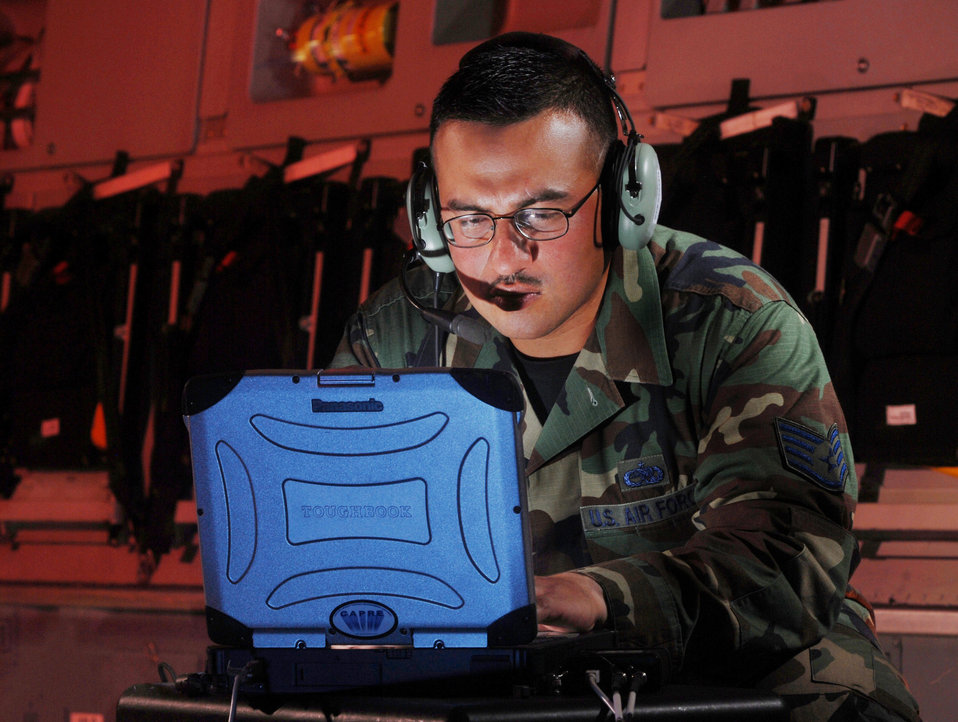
One more click and it's done ...

Staff Sgt. Carlos A. Rocha updates software for the missile warning system onboard a C-17 Globemaster III at March Air Reserve Base, Calif. He is an electronic warfare technician from the 452nd Maintenance Squadron here.